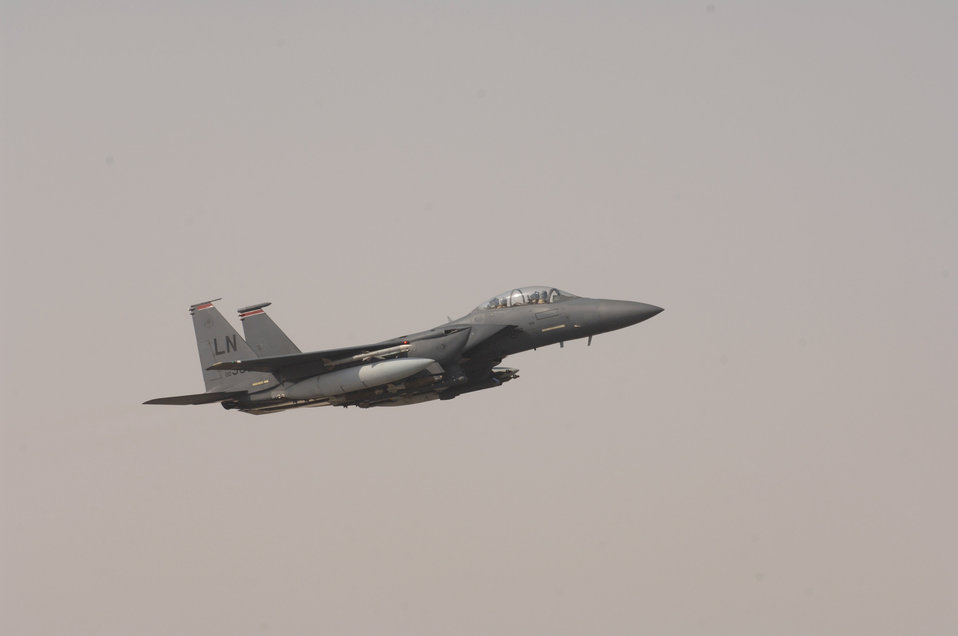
New weapon makes job of munitions specialists a 'snap'

An F-15E Strike Eagle assigned to the 494th Expeditionary Fighter Squadron heads down range to employ the Guided Bomb Unit-39/B small diameter bomb for the first time during combat operations. The squadron is deployed from Royal Air Force Lakenheath, England, in support of Operation Iraqi Freedom.